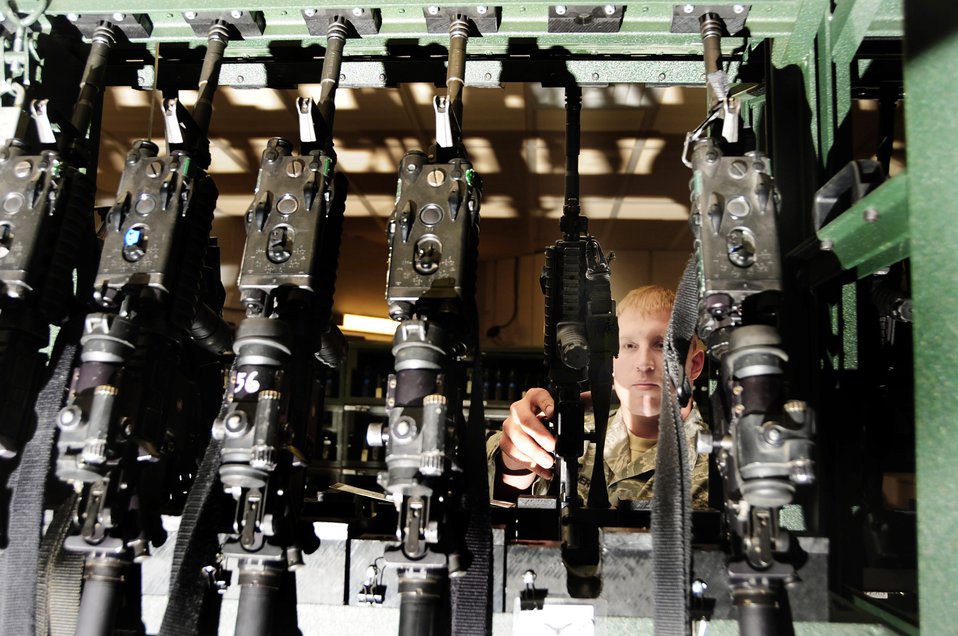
All present and accounted for

Senior Airman Tyler Brunner checks M-4 carbine rifles in the armory April 27, 2010, at Ellsworth Air Force Base, S.D. Airman Brunner is a staff armory Airman with the 28th Security Forces Squadron.